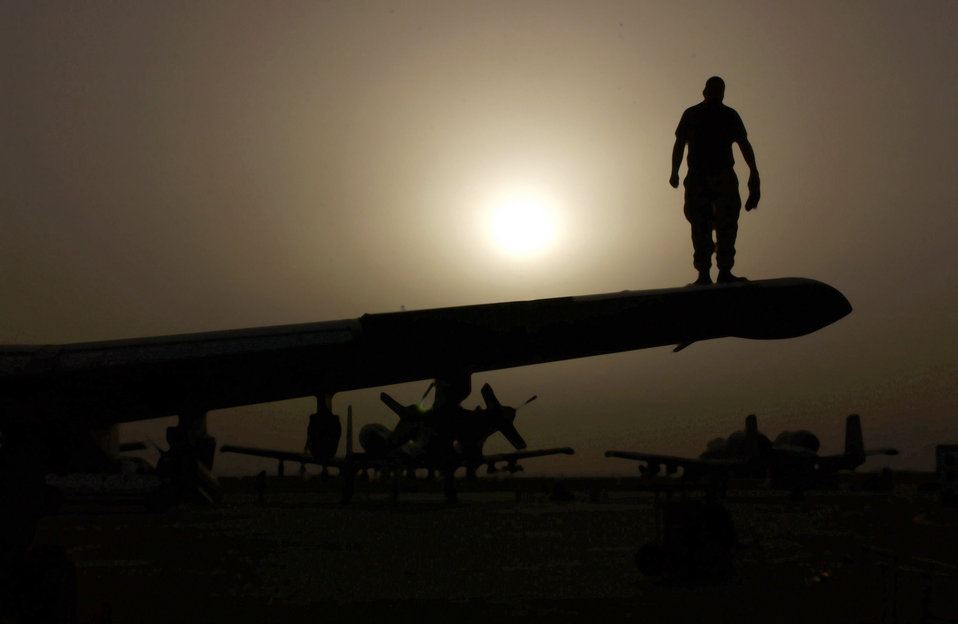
Wing repair

A crew chief from the 332nd Air Expeditionary Wing performs maintenance repairs on the wing of an A-10 Thunderbolt II March 29 at a forward-deployed location. The fighters fly missions into Iraq in support of Operation Iraqi Freedom.